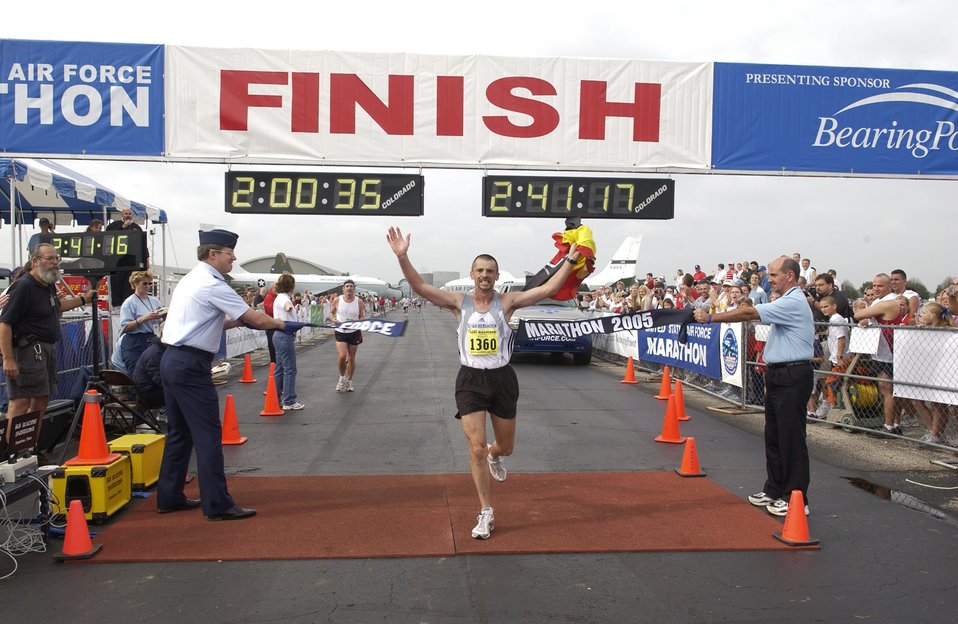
Race to the finish

WRIGHT-PATTERSON AIR FORCE BASE, Ohio -- Hendrick Vanloon, a native of Belgium, victoriously runs across the finish line at the ninth annual U.S. Air Force Marathon on Sept. 17, taking first place. Mr. Vanloon completed the race in 2 hours 41 minutes and 15.9 seconds. The runners traversed a grueling 26.2 miles here and in the local community.